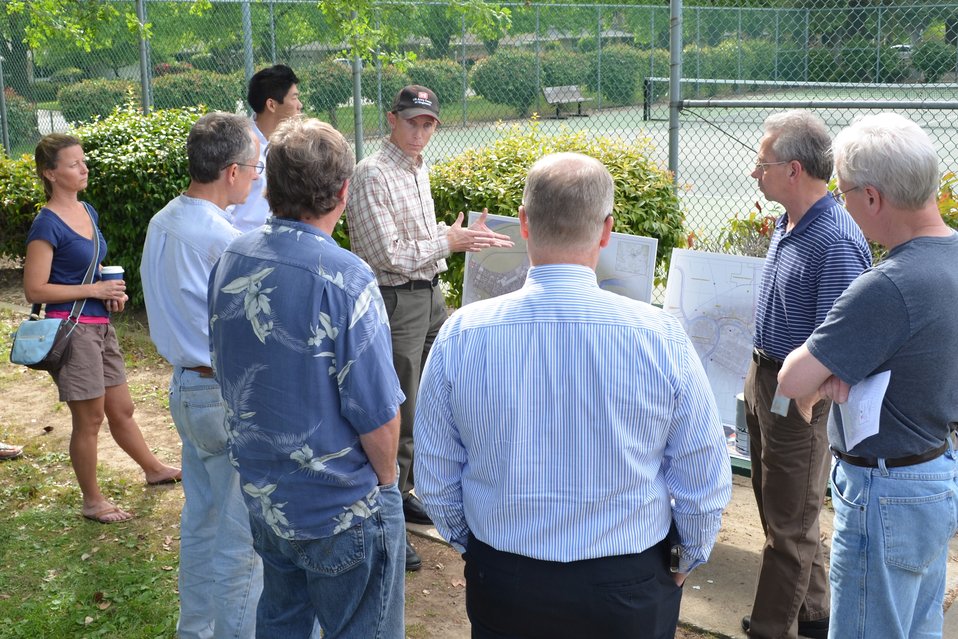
Levee work topic of public meeting in River Park

Mark Boedtker (center), an engineering technical lead for the U.S. Army Corps of Engineers Sacramento District answers questions during a public meeting April 24, 2015, regarding American River levee work in the River Park neighborhood of Sacramento, Calif., beginning in June.